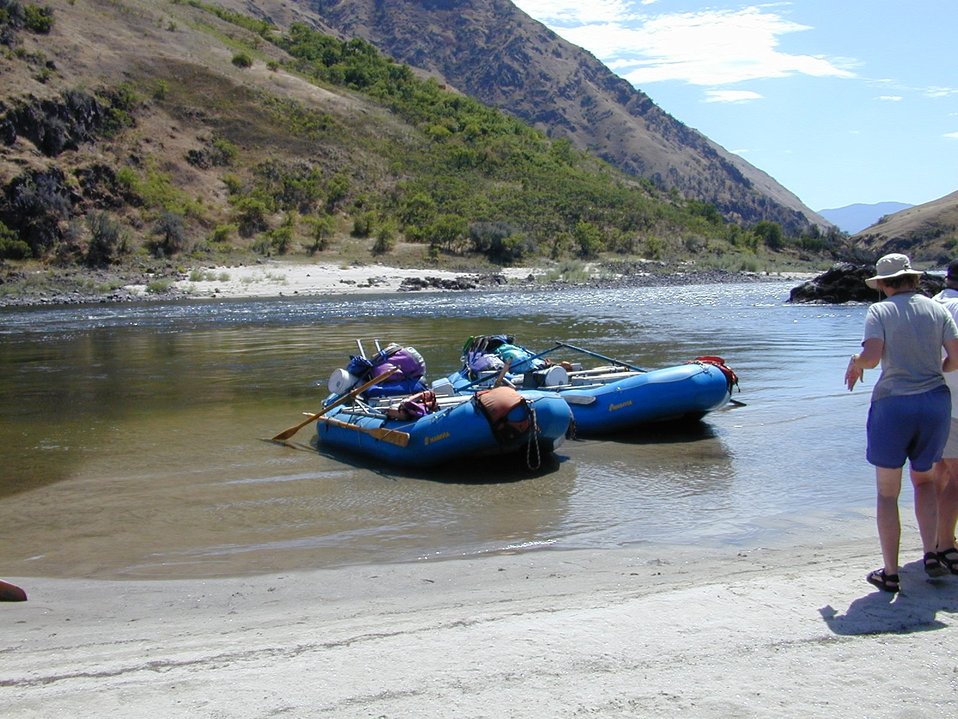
Recreation Rafting on Lower Salmon River Cottonwood Field Office UCSC Upper Columbia Salmon Clearwater District